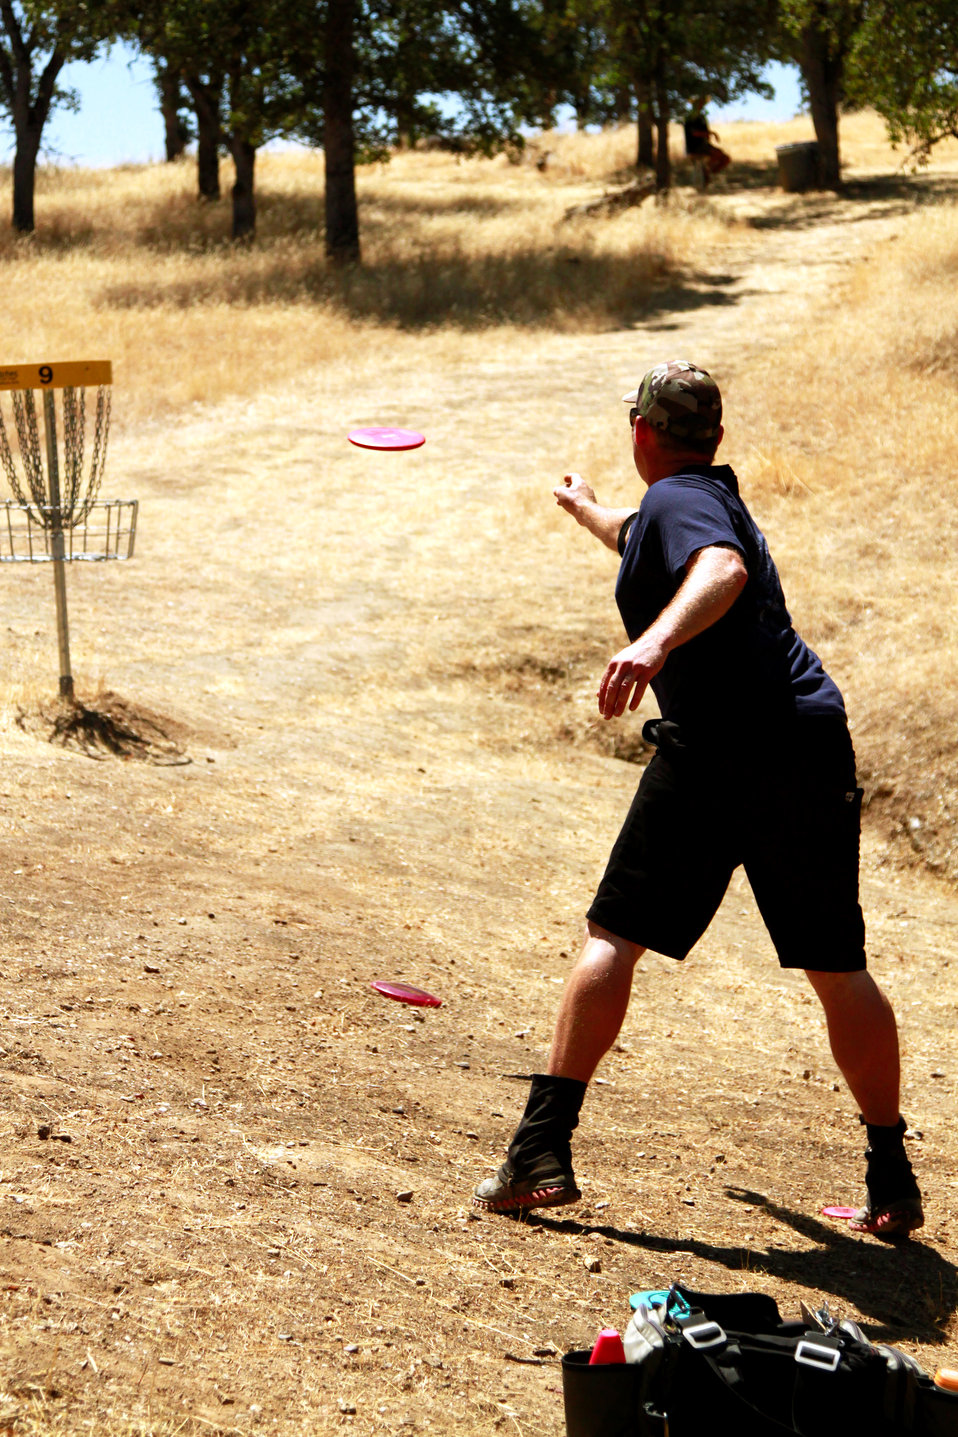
Corps' Black Butte Lake hosts disc-golf charity event

A participant shoots for the ninth hole during this year's charity disc golf tournament at the Corps' Black Butte Lake July 1, 2012. More than $4,000 dollars was raised for the Glenn Medical Foundation this past weekend as 77 disc golfers from throughout California traveled to Black Butte Lake for the third annual Banging Chains for Charity disc golf tournament. (U.S. Army photo Seth Jantzen/Released)